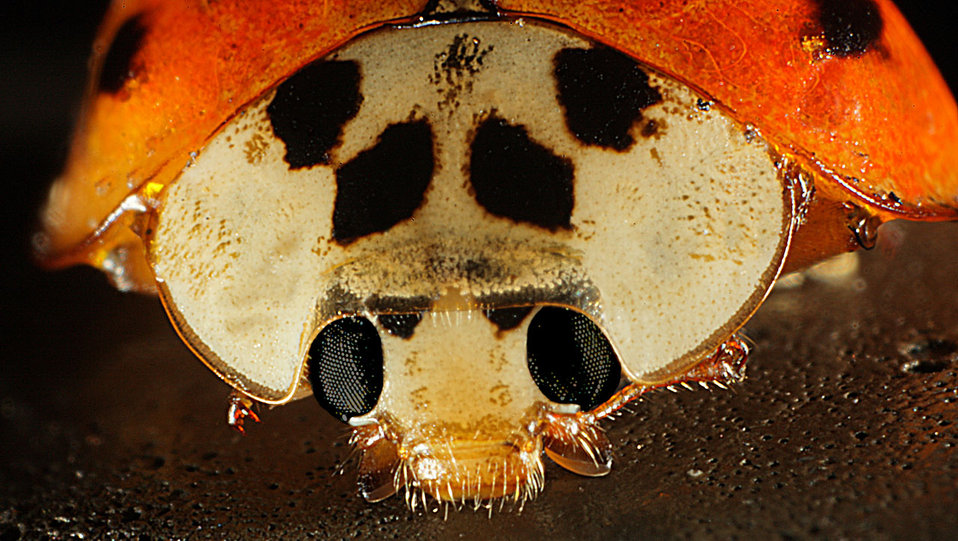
Lady bug face

The face of a lady bug..